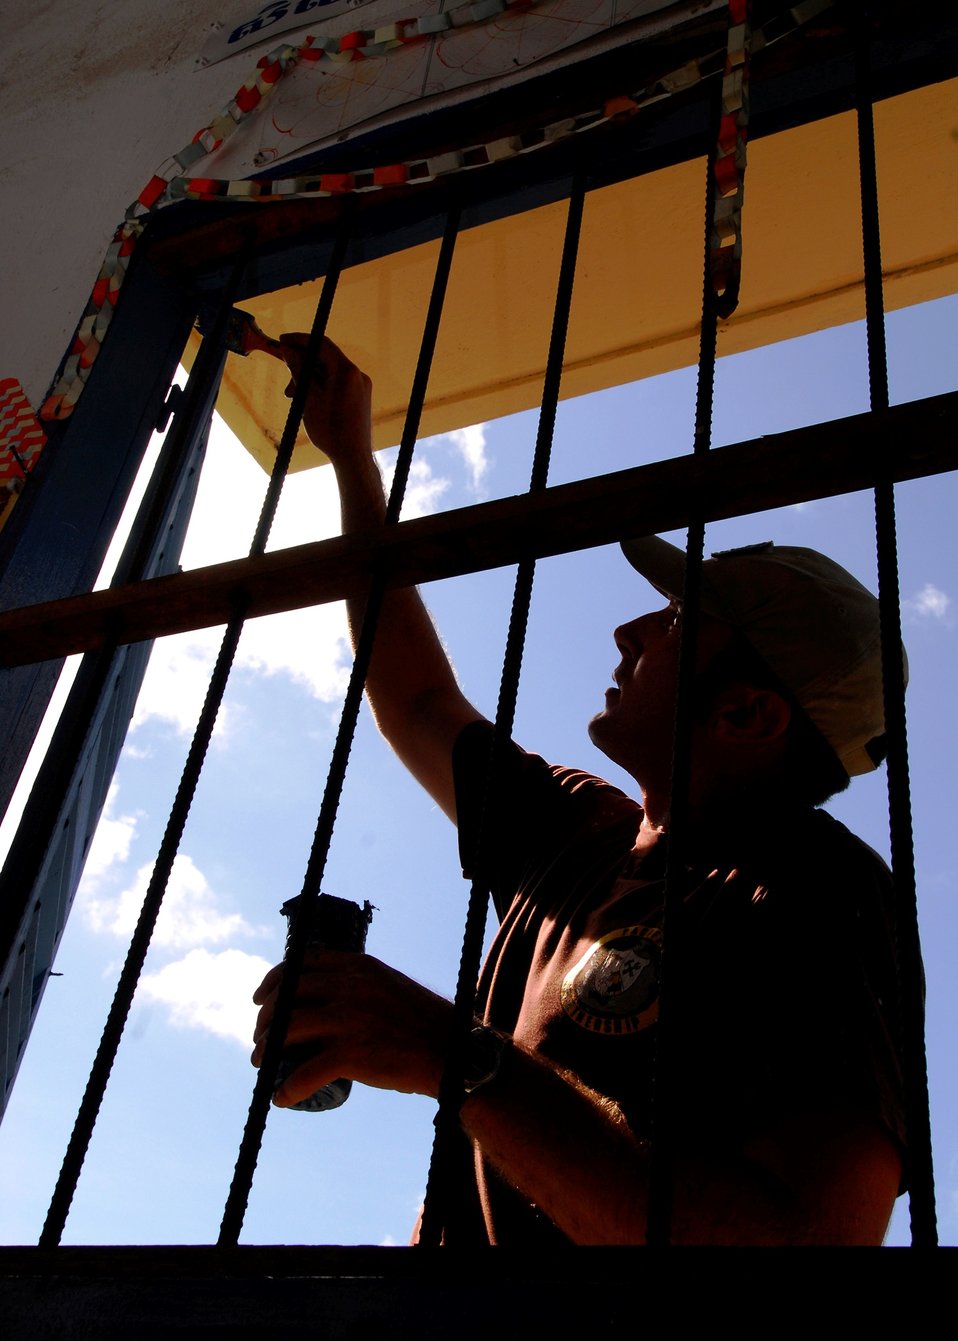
Australian Army Combat Engineer Lance Cpl. Sam Marshall paints a window frame during an engineering civic action event at O. Tres Chas Primary School in Sihanoukville, Cambodia, on June 24, 2010. The Military Sealift Command hospital ship, USNS Mercy (T-AH 19), is in Cambodia in support of Pacific Partnership 2010.